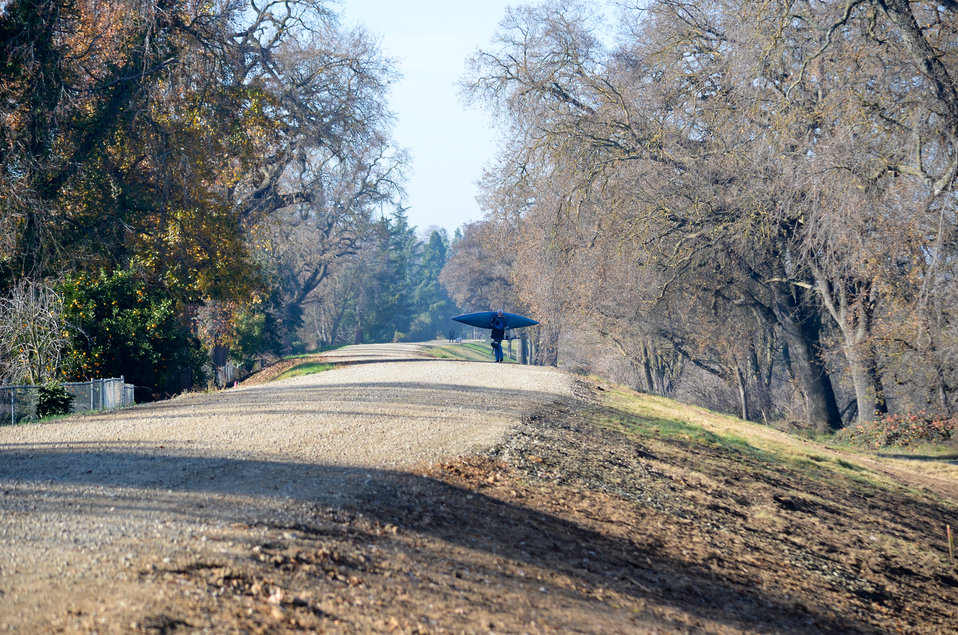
American River levee surveyed near Watt Avenue

A kayaker emerges from the American River near Watt Avenue in Sacramento, Calif., Jan. 4, 2012, where surveyors for the U.S. Army Corps of Engineers Sacramento District recorded locations of structures and trees along 50 miles of Sacramento levees. The survey is part of a study to plan future levee improvements. Researchers identified as many as 16,000 levee penetrations, encroachments (like pools and power lines) and trees during the four-month survey.